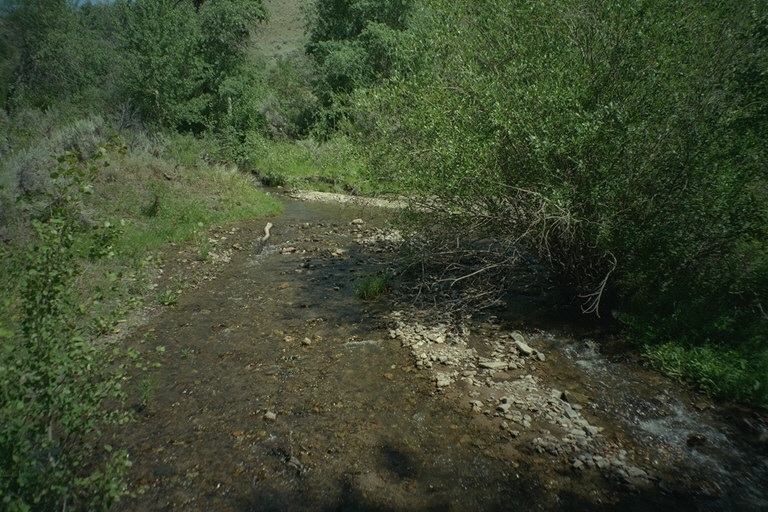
Riparian area Public Lands Salmon Field Office UCSC Upper Columbia Salmon Clearwater District